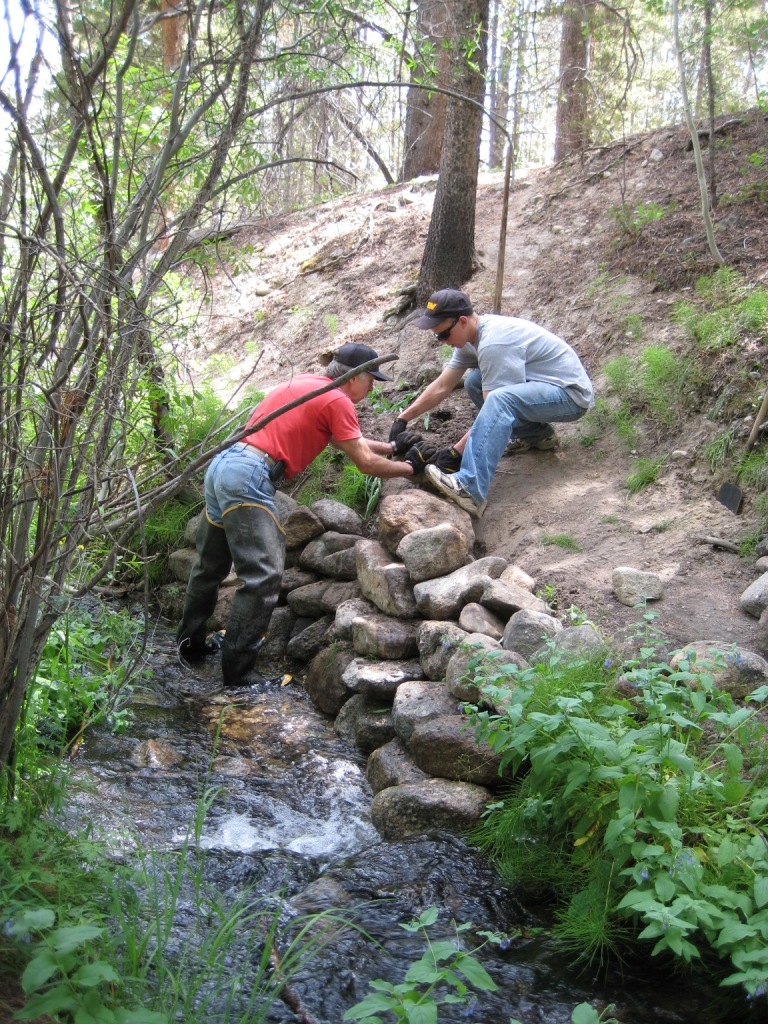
Volunteers Building A Wall

Volunteers constructing a retaining wall along Evergreen Lakes Trail at Leadville National Fish Hatchery. Leadville NFH is the second oldest National Fish Hatchery in existence and hosts about 36,000-50,000 visitors annually.